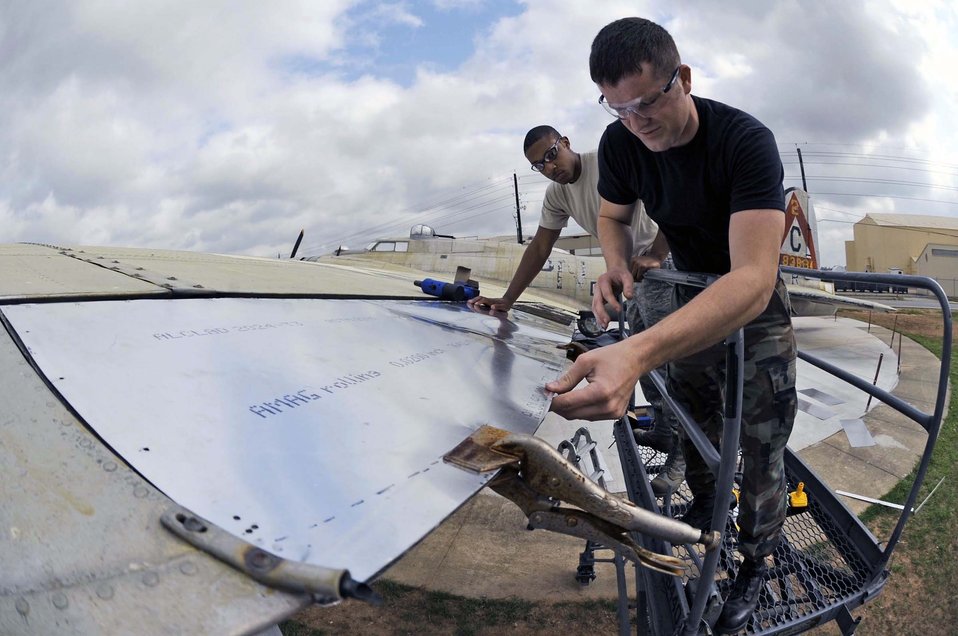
Barksdale Airmen restore B-17G for 8th Air Force museum

Airmen 1st Class Bronson Bohannon (right) and Avondries Green install rivets on new sheet metal wing flaps April 5, 2010, at Barksdale Air Force Base, La. Airmen Bohannon and Green are 2nd Maintenance Squadron aircraft structural maintainers.